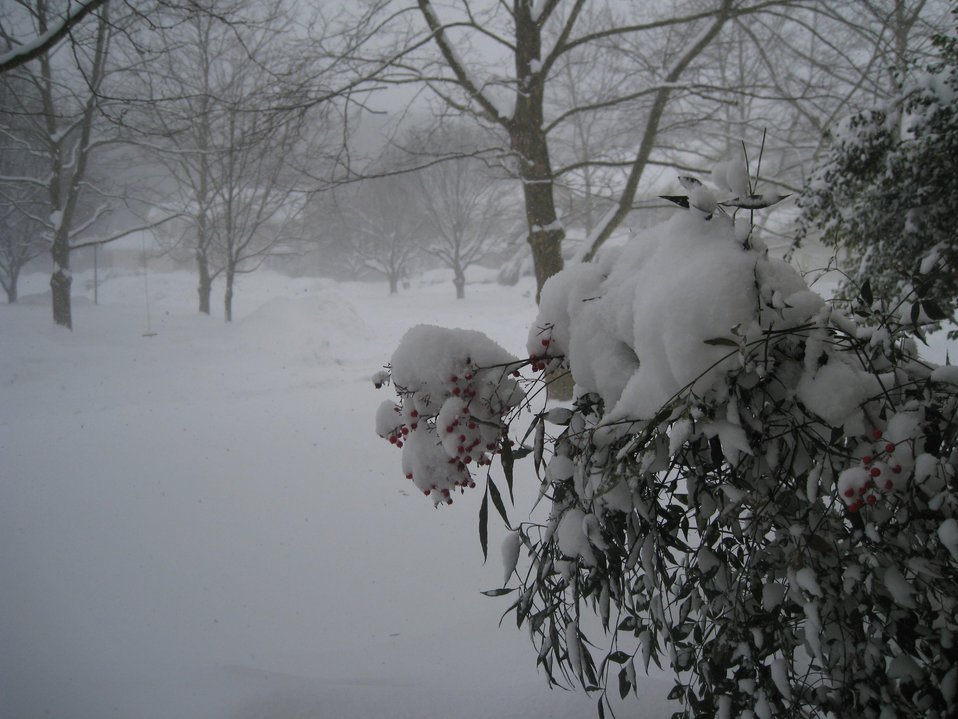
The third great storm of the winter of 2009/2010. This storm was a true blizzard with sustained winds of 35 mph or greater over much of the Mid-Atlantic region and areas acquiring for the third time between 1 and 3 feet of snow. About 10 miles north of this picture, 10-foot snow drifts stranded numerous motorists in the Frederick, Maryland, area.